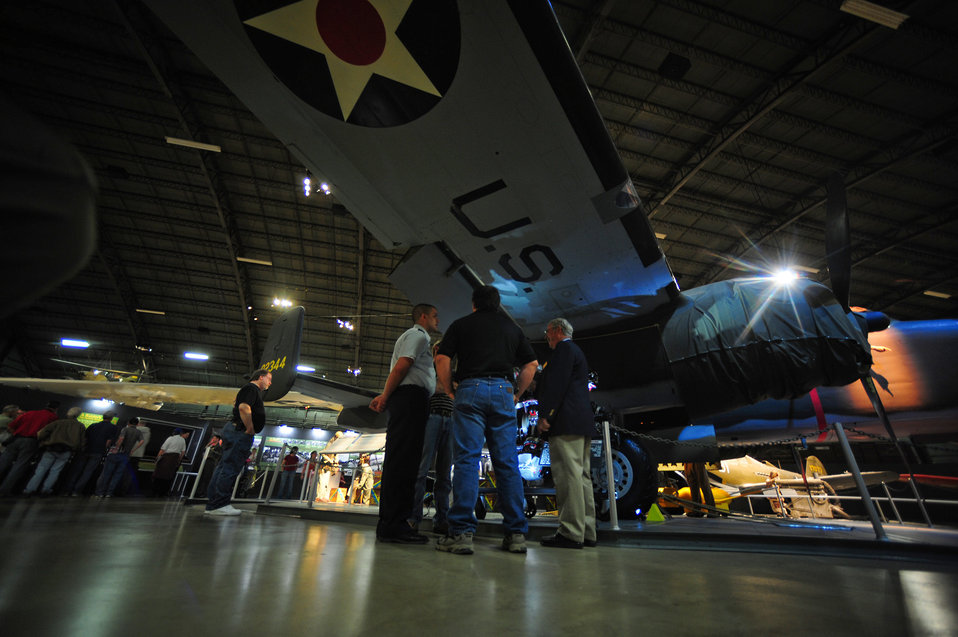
68th Doolittle Raiders Reunion

Visitors get a view under the wing of a B-25. They attend the Doolittle Raiders' 68th reunion at the National Museum of the U.S. Air Force, Wright-Patterson Air Force Base, Ohio, April 16, 2010. The event commemorates the April 18th, 1942 Doolittle Tokyo Raid